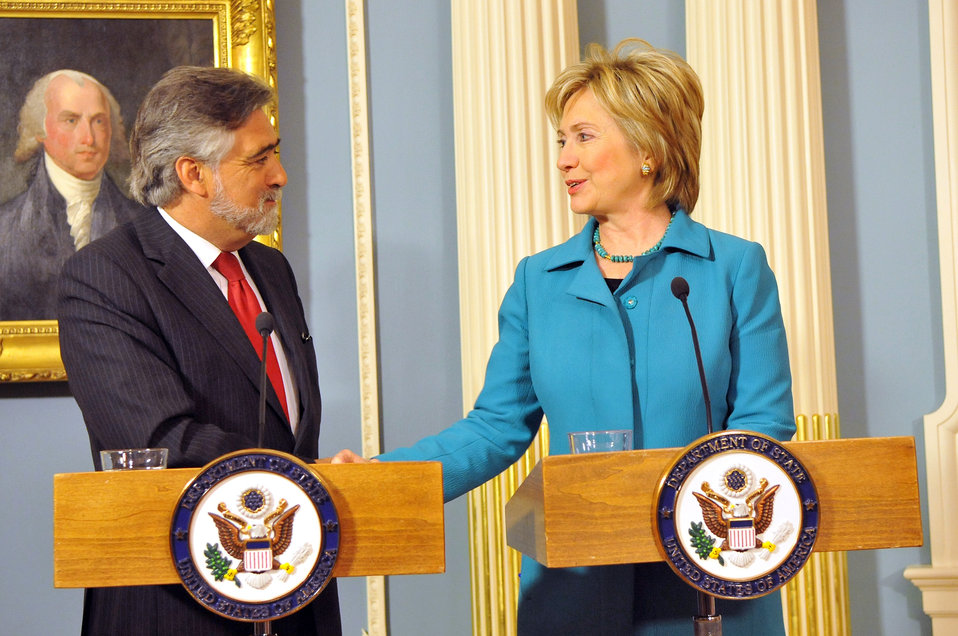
Secretary Clinton With Portuguese Foreign Minister

U.S. Secretary of State Hillary Rodham Clinton meets with Portuguese Foreign Minister Luis Amado at the U.S. Department of State in Washington, DC June 5, 2009.